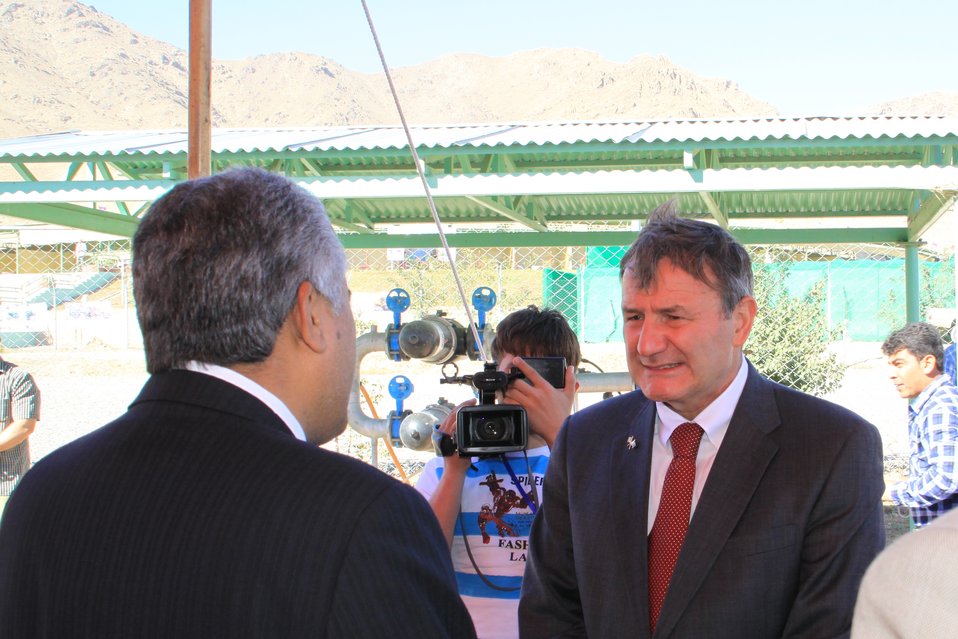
AVIPA Plus Wheat Seed Distribution 101005